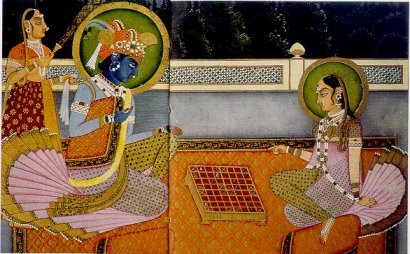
Krishna and Radha playing chaturanga on an 8x8 Ashtāpada